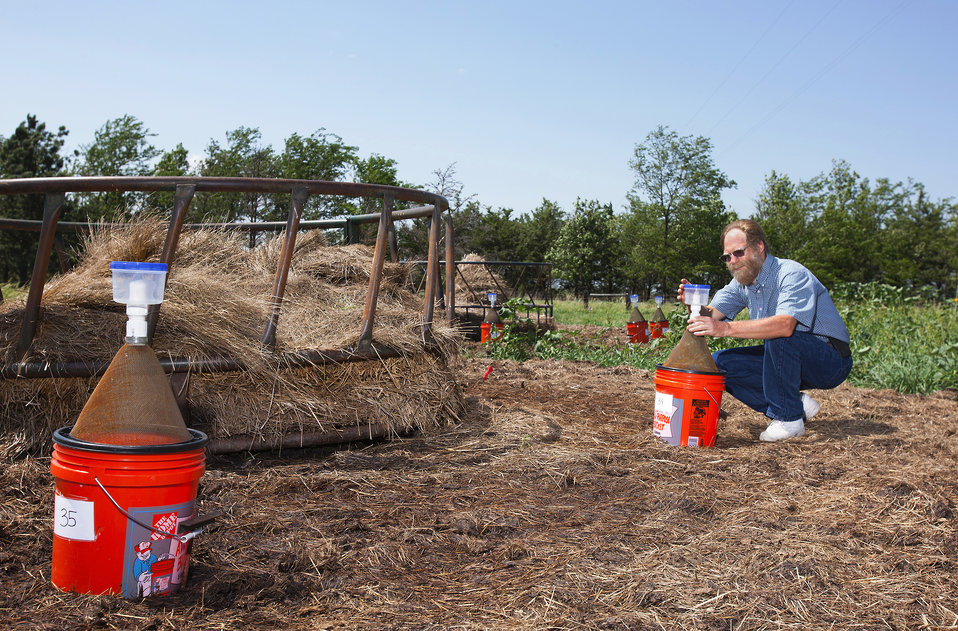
U.S. Department of Agriculture (USDA) Agriculture Research Service (ARS) entomologist David Taylor checks a stable fly emergence trap near a hay-feeding site in Lincoln, NE on Oct. 31, 2003. The trap is used to evaluate the effects of chemical and physical treatments on stable flies.